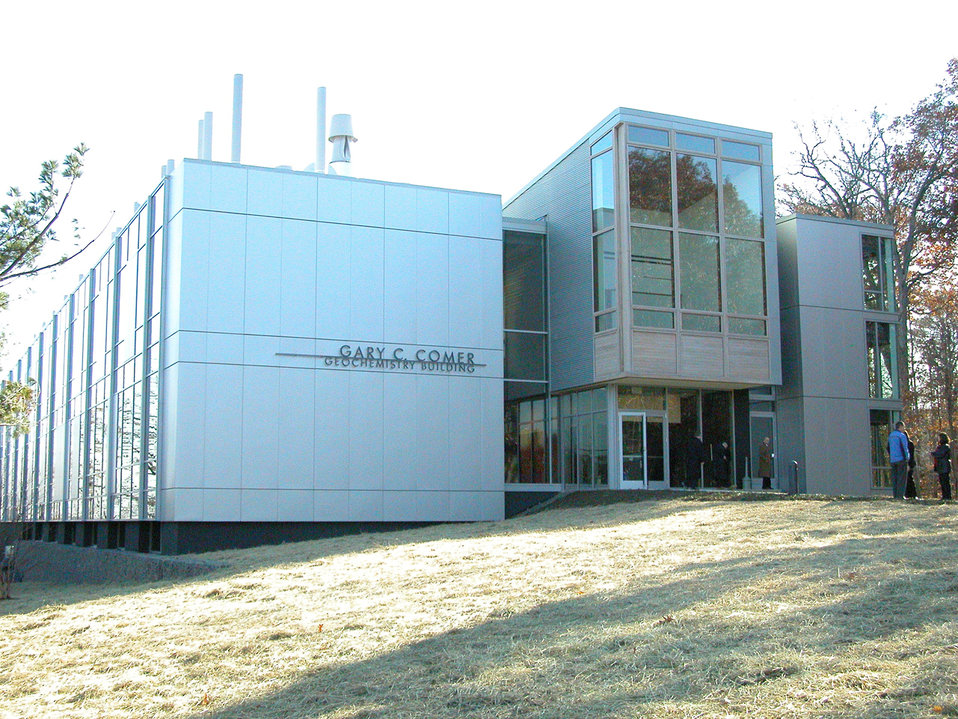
Recovery Act Grant; Columbia University

The Ultraclean Geochemistry Laboratory will be housed in the Comer Geochemistry Building on Columbia University's Lamont Campus in Palisades, NY.